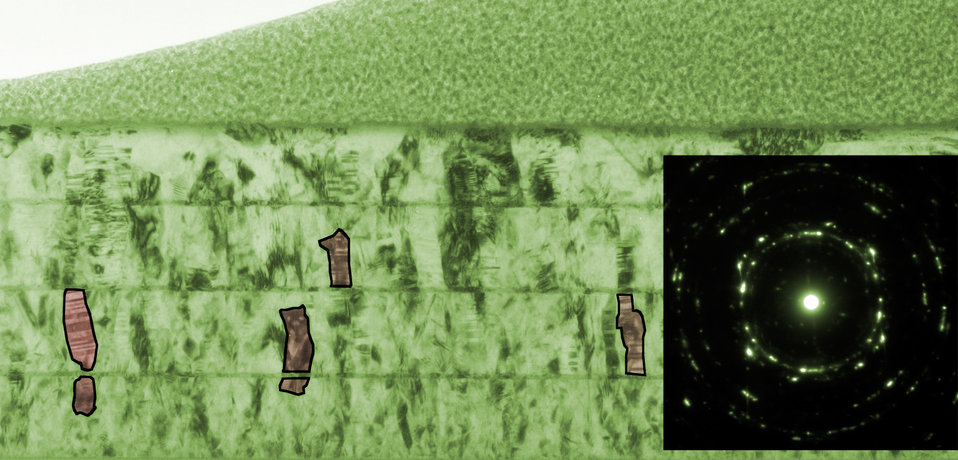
Magnetic fields; Transmission electron microscope

Transmission electron microscope (TEM) images show sections of a film of nickle-iron-copper-molybdenum alloy layered with silver every 100 nanometers. By relieving strain in the film, the silver layers promote the growth of notably larger crystal grains in the layered material as compared to the monolithic film (several are highlighted for emphasis). Electron diffraction patterns (insets) tell a similar story - the material with larger crystal grains display sharper, more discrete scattering patterns. (Color added for clarity.)